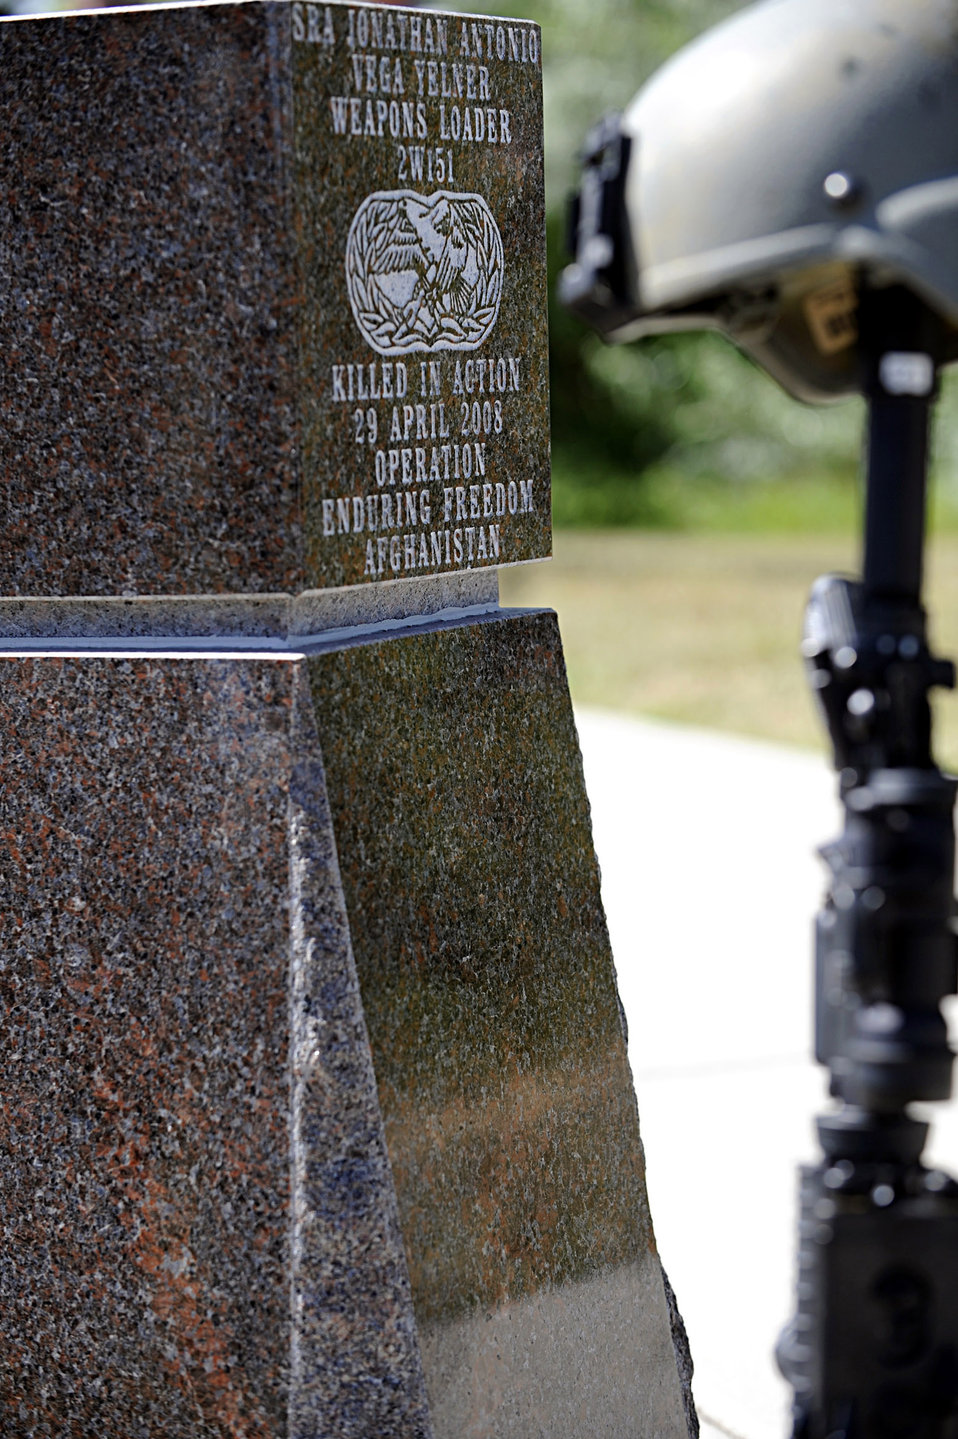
Airmen honor the fallen

During a dedication ceremony, a pillar and display honoring Senior Airman Jonathan Yelner stands August 7, 2009, at the Memorial Park at Ellsworth Air Force Base, S.D. Airman Yelner was a weapons load crew member with the 28th Aircraft Maintenance Squadron.